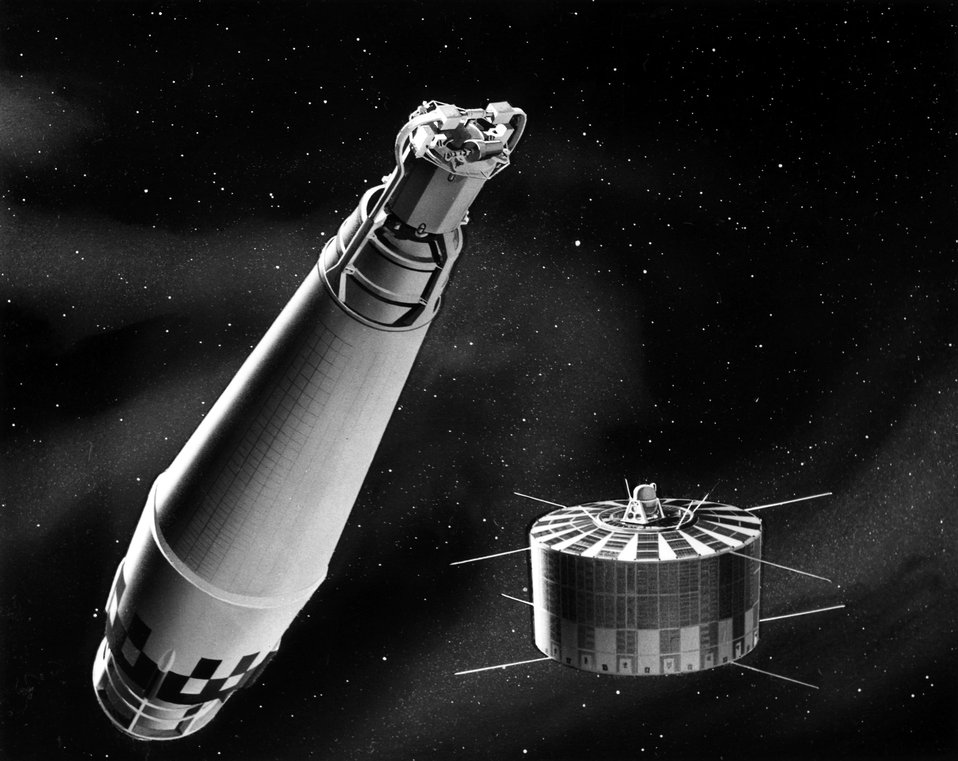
Artist's conception of two compact SNAP systems: the 500 watt SNAP 10A system, which uses a compact nuclear reactor as a heat source (left), and the Navy's Navigational satellite, which uses a SNAP isotopic power generator to supply auxiliary power,